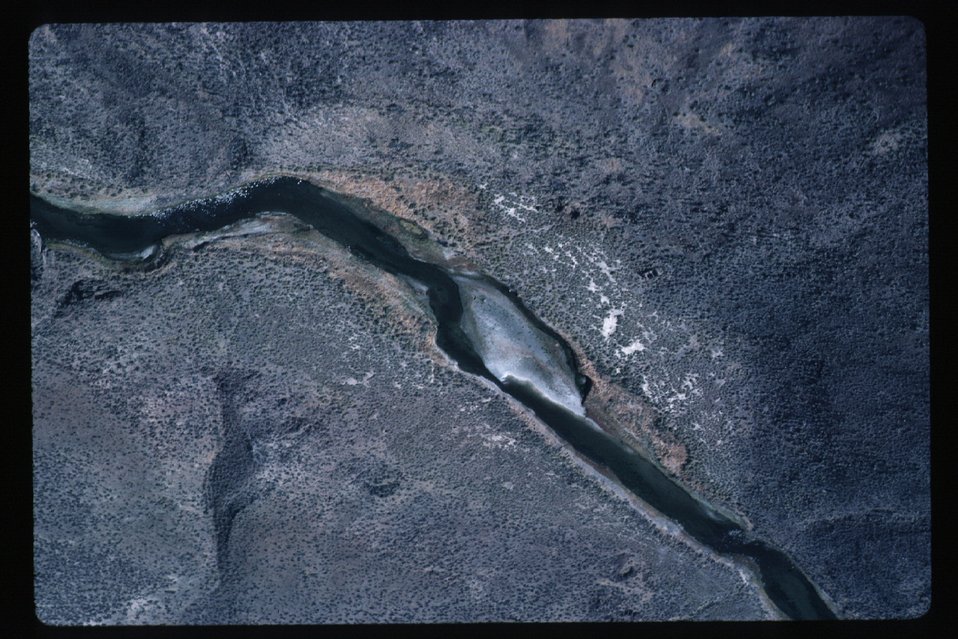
Bull Camp South Fork Owyhee Archeology LSRD Lower Snake River District